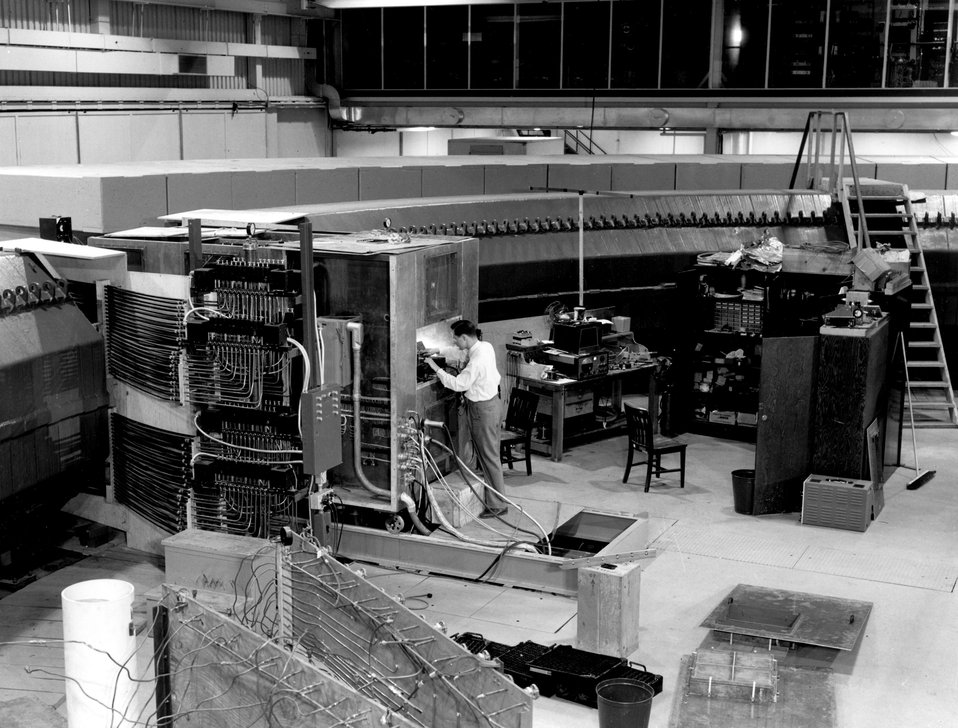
A view of the inside of the Cosmotron ring showing engineer working or
high level power amplifier. The orderly assembly of tubes and hoses to the left is
a portion of the waterflow interlock system.